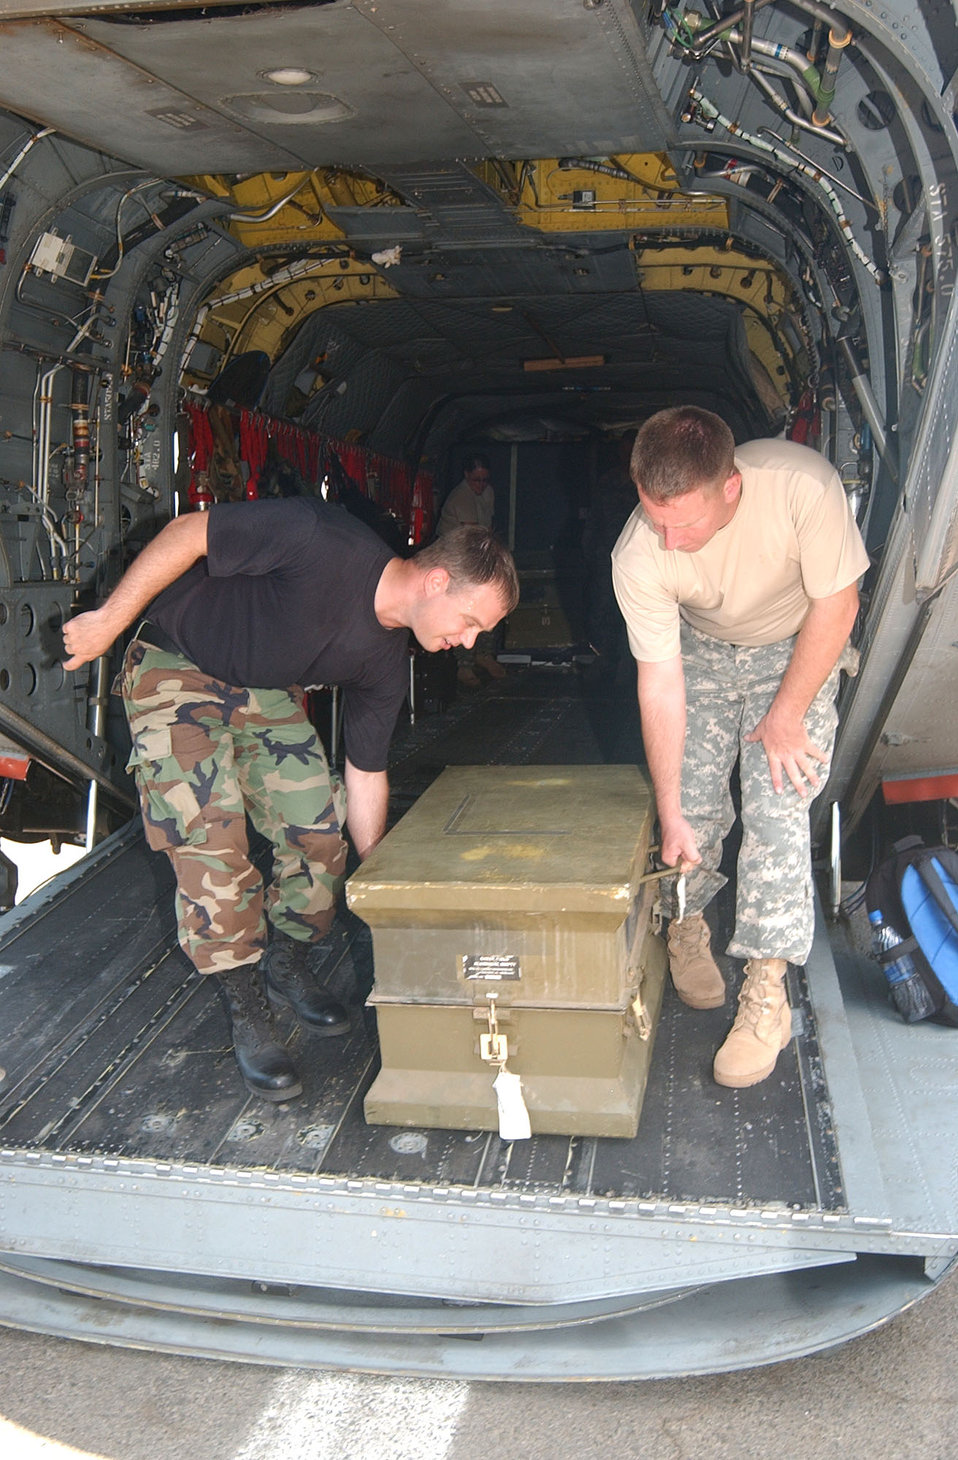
U.S. military gives medical equipment to Nicaragua

Staff Sgt. Robert Jessop and Army Staff Sgt. William Grieshaber unload a trunk filled with medical equipment which was donated to a hospital in Leon, Nicaragua, Sept. 13. Joint Task Force-Bravo members at Soto Cano Air Base, Honduras, donated more than $185,000 worth of medical equipment and supplies to a hospital in Leon where 45 people died and hundreds more were being treated for alcohol poisoning.